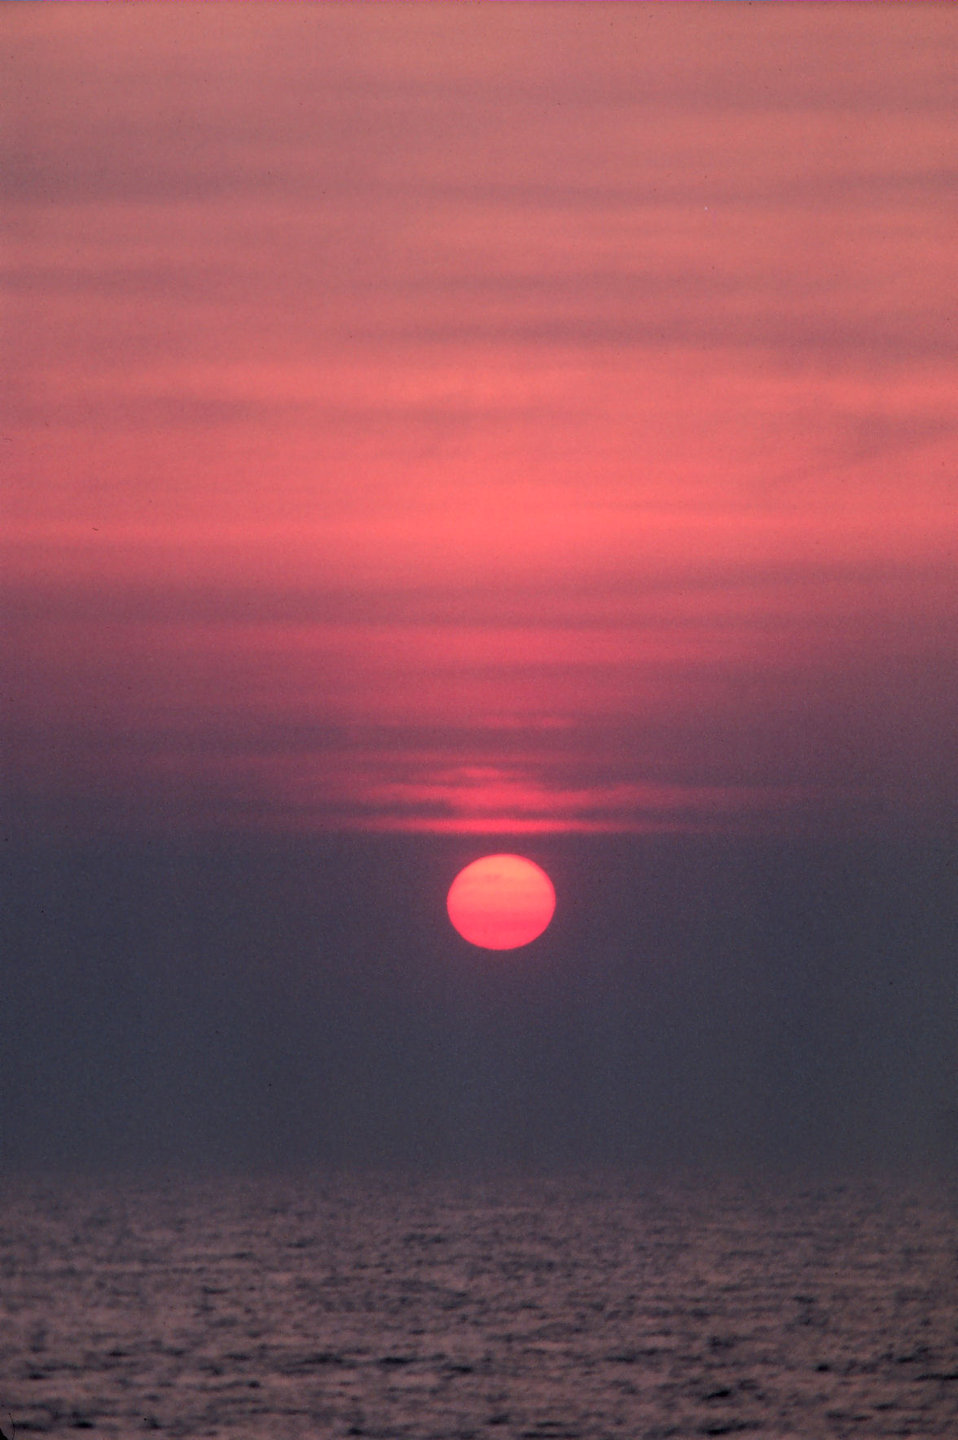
Sun as an orange sphere setting over the ocean.